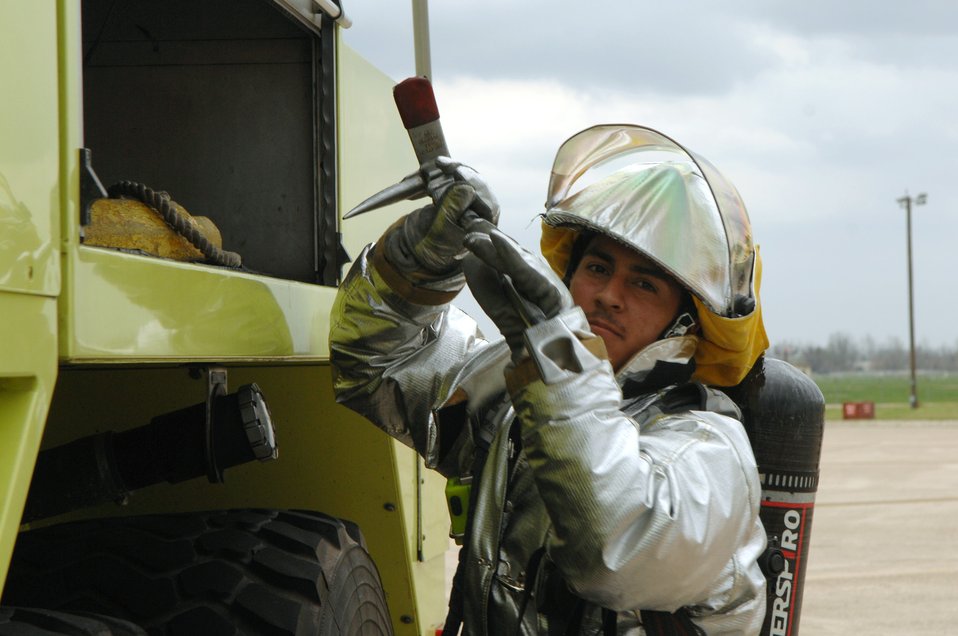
Global Cajun 07-2

Airman Michael Ramos grabs a tool from a storage compartment on the outside of a fire truck Feb. 12 during a Conventional Operational Readiness Exercise at Barksdale Air Force, La. Airman Ramos is working in support of Global Cajun 07-2 exercise.